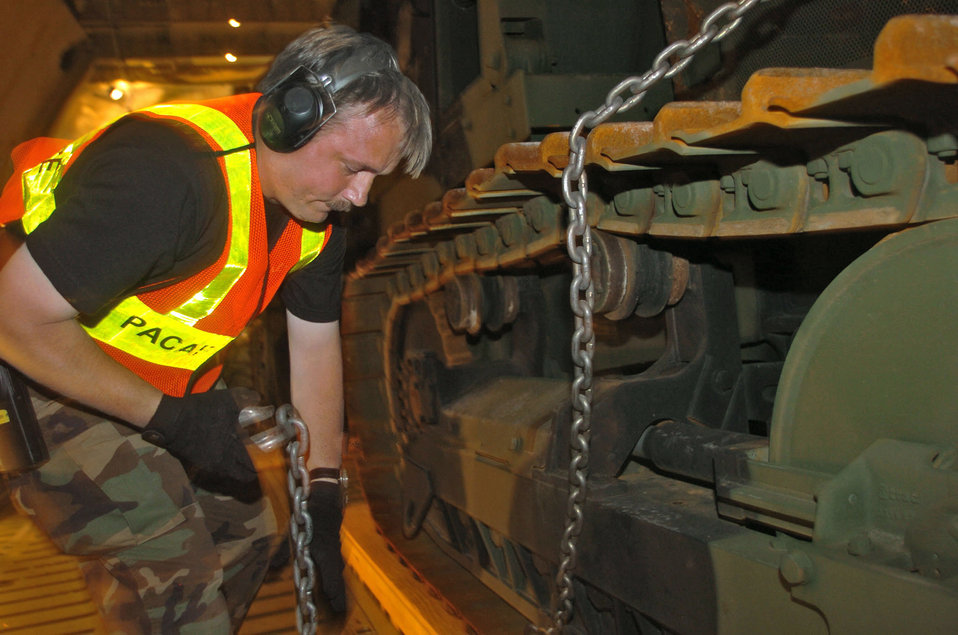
A Galaxy far, far away

BANDANAIKE, Sri Lanka -- Master Sgt. Jeff Wisley unhooks tie-down chains so heavy equipment can be unloaded from a C-5 Galaxy aircraft. The aircraft, assigned to the 60th Airlift Wing at Travis Air Force Base, Calif., landed at the international airport here supporting Operation Unified Assistance. U.S. servicemembers are helping bring relief supplies and equipment to various locations in Sri Lanka. Sergeant Wisley is assigned to the Pacific Air Forces' tanker airlift control element at Yokota Air Base, Japan.